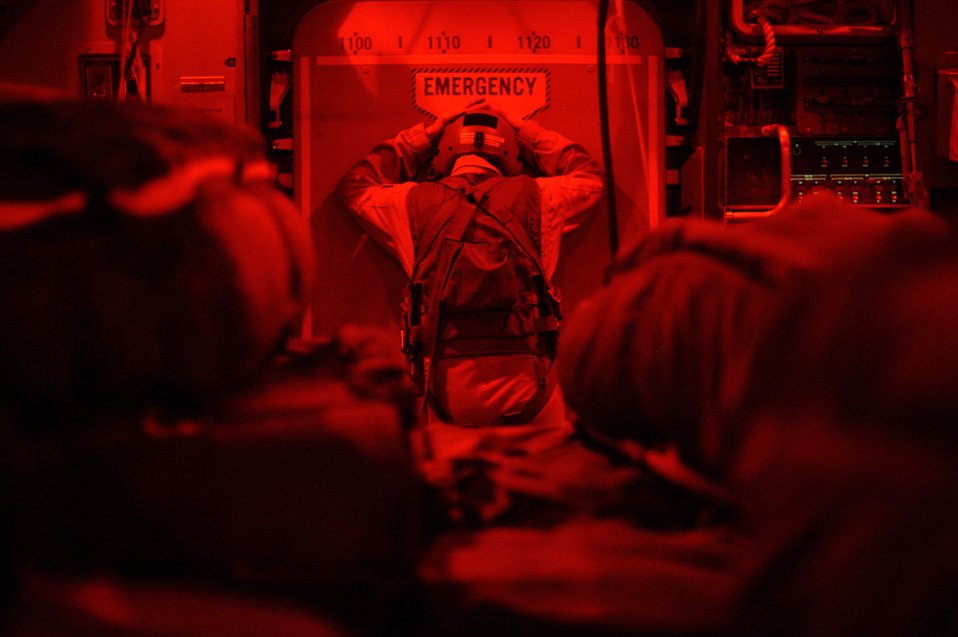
Supply drop in Afghanistan

Staff Sgt. Chad Beach watches for threats to the C-17 Globemaster III during an airdrop of supplies for a forward operating base in Afghanistan, Aug. 27, 2009, in support of Operation Enduring Freedom. Sergeant Beach is a loadmaster with the 817th Expeditionary Airlift Squadron, and deployed from McChord Air Force Base, Wash.